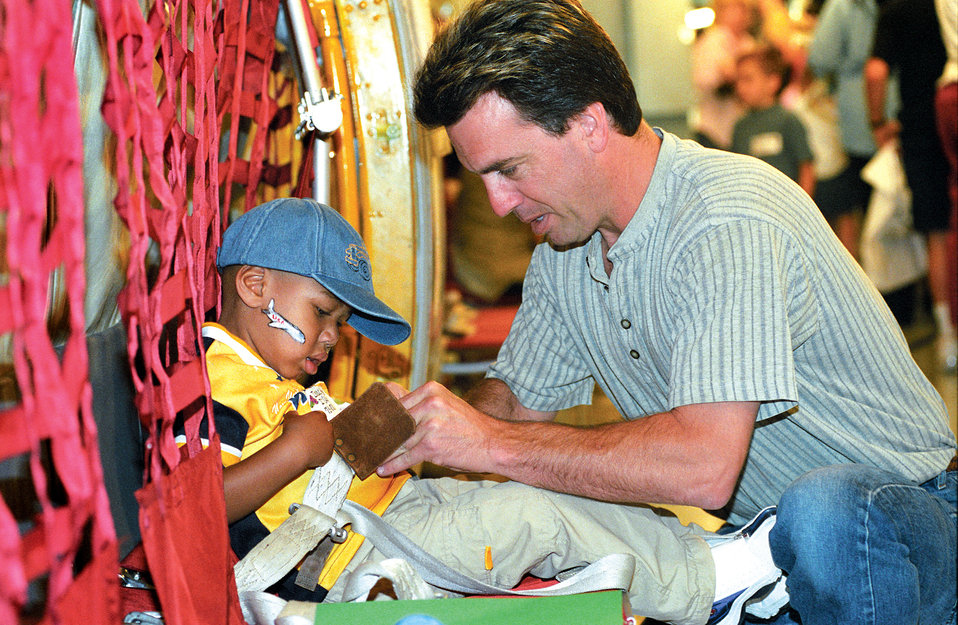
Child's play

TINKER AIR FORCE BASE, Okla. -- Aircraft mechanic Ken Grimshaw buckles 2-year-old Isaac Watson into a troop seat aboard a KC-135 Stratotanker. Isaac's visit was part of the